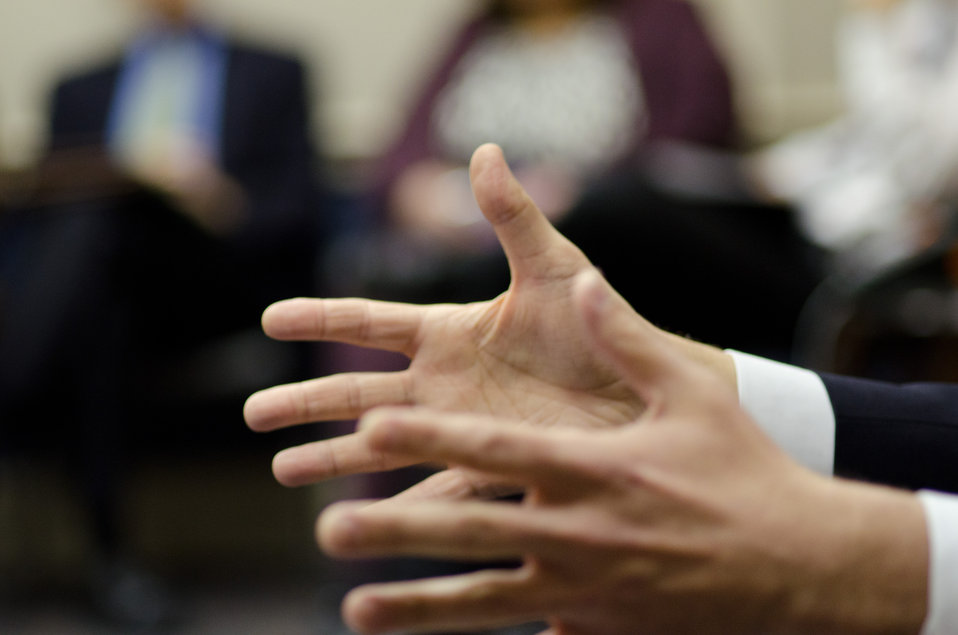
U.S. Department of Agriculture Associate General Counsel for Rural Development David Grahn, emphasizes equality in the speed in which issues are addressed and processed, during an Office of Tribal Relations meeting in Washington, DC, on Monday, March 28, 2011.